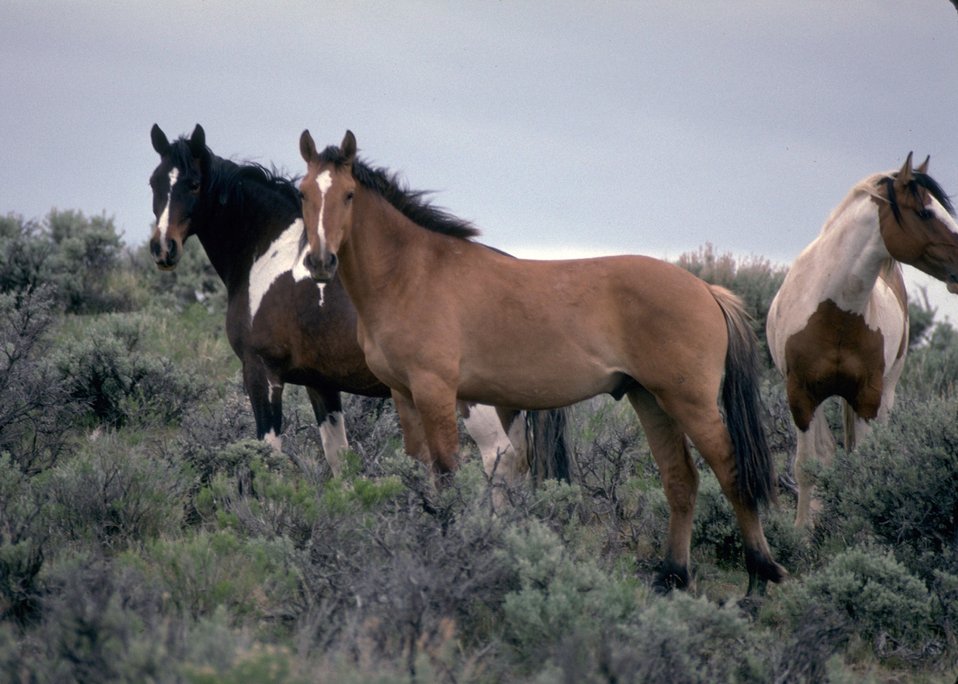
South Steens Wild Horses on Steens Mountain in the Burns District in Southeastern Oregon.